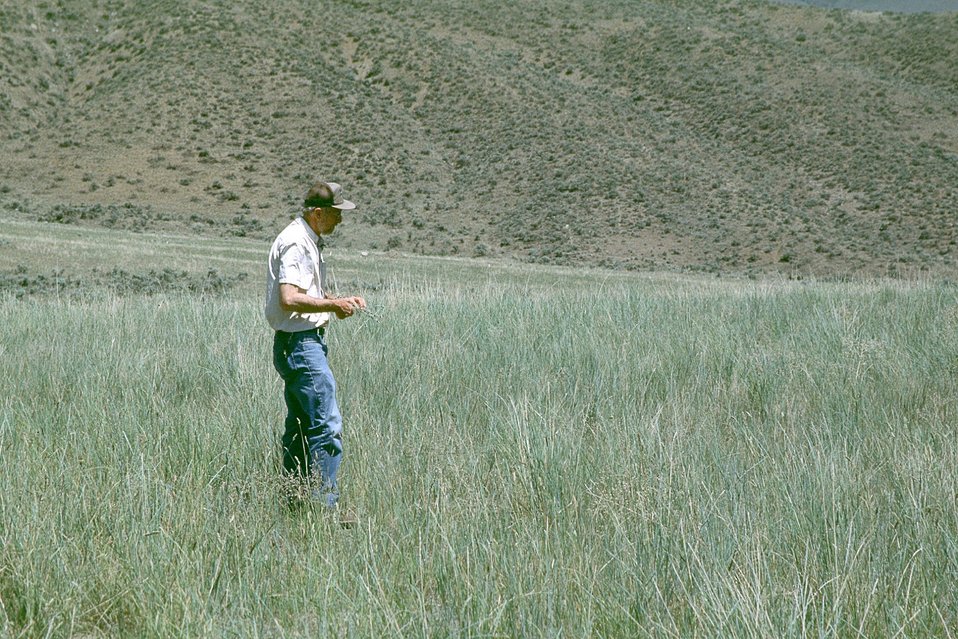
AML. "Jake" Jakaboski at Kaaba-Texas Mine Repository.